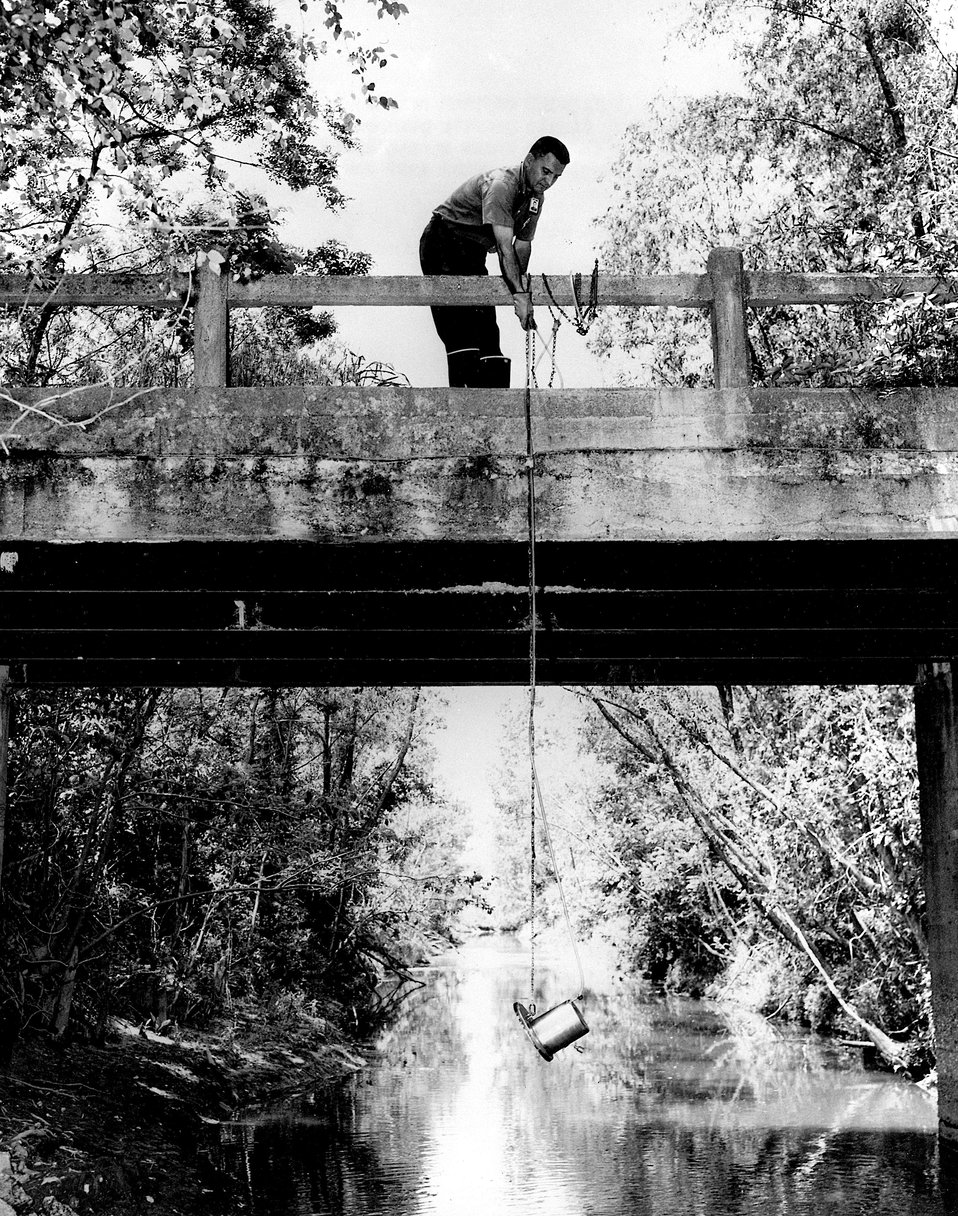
POLLUTION CONTROL starts with small tributaries. Simple gravity-powered device developed at the Paducah Plant automatically obtains continuous sample integrated over one week. Circa 1967.